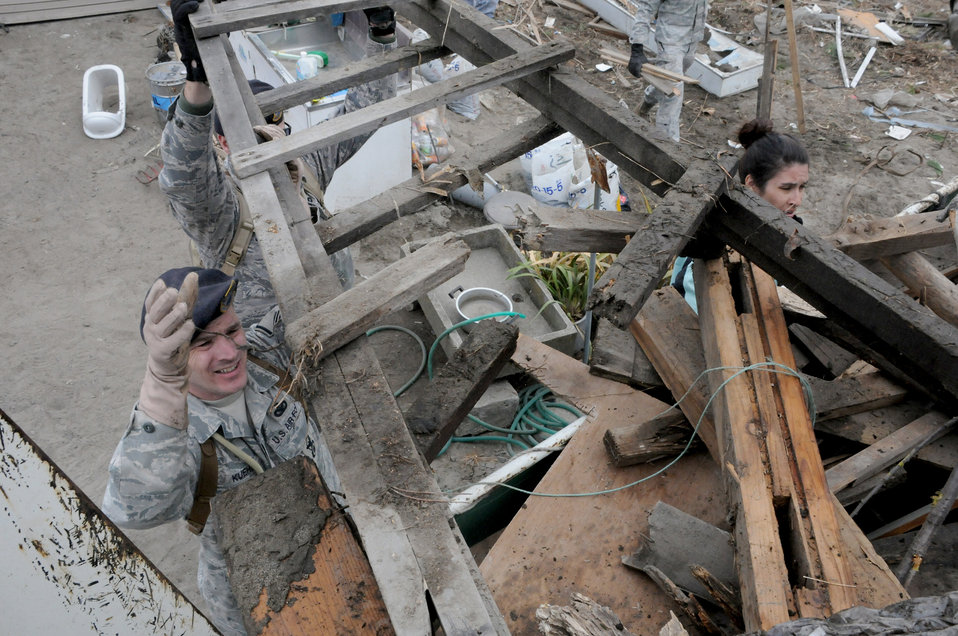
Misawa Airmen continue relief efforts

Master Sgt. Donald Kuehl loads debris into the back of a flatbed truck with the help of other Misawa Air Base residents April 7, 2011, during a relief operation in Hachinohe, Japan. Sergeant Kuehl is assigned to the 35th Security Forces Squadron.